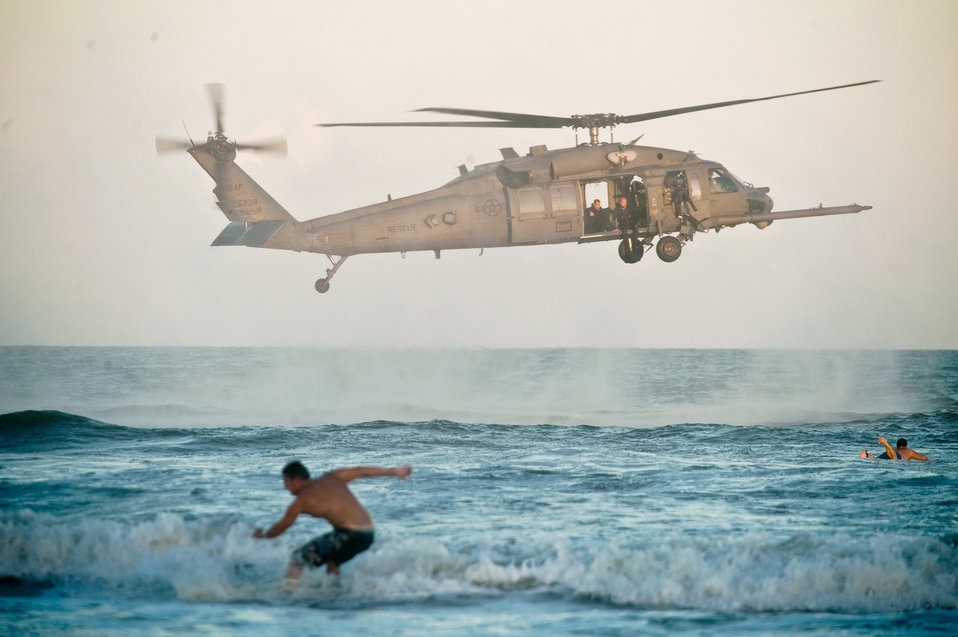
Jump on in, the water’s fine

A surfer catches a wave as pararescuemen in an HH-60G Pave Hawk prepare to descend to the water during a rescue demonstration Oct. 27, 2010, at Cocoa Beach, Fla. The demonstration was part of Air Force Week Cocoa Beach, a weeklong event meant to showcase Air Force capabilities and increase public awareness. The pararescuemen are from the 920th Rescue Wing at Patrick Air Force Base, Fla.